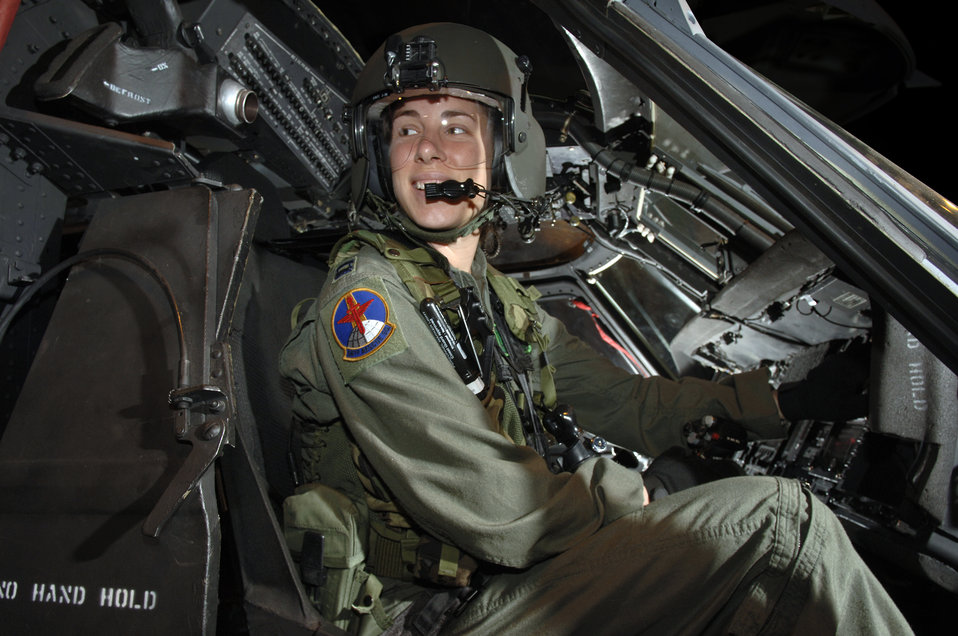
Rescue unit faces moving challenges

HH-60 Pave Hawk helicopter pilot Capt. Danielle O'Neill checks the controls response on her helicopter at Royal Air Force Lakenheath, England, on Aug. 2. The captain is with the 56th Rescue Squadron. The unit moved here from Keflavik Air Base, Iceland, in May.